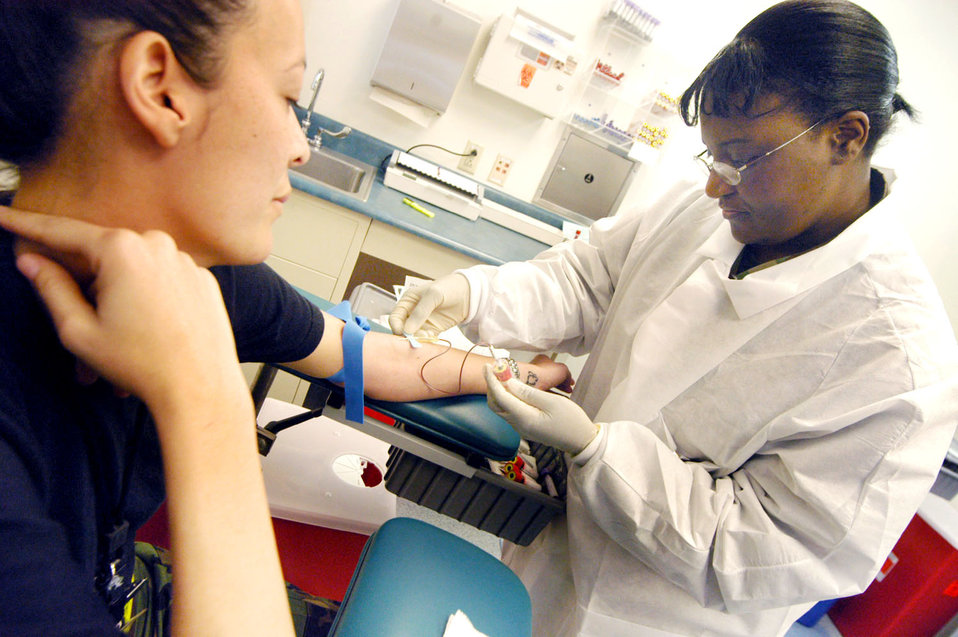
Analyze this

ROBINS AIR FORCE BASE, Ga. -- Tech. Sgt. Clara Miller draws blood from Senior Airman Suzanne Pamplin. Sergeant Miller is a laboratory technician with the 78th Medical Group here. Lab technicians ship test samples to laboratories at Brooks City-Base and Lackland Air Force Base's Wilford Hall Medical Center in San Antonio for analyses not performed here.